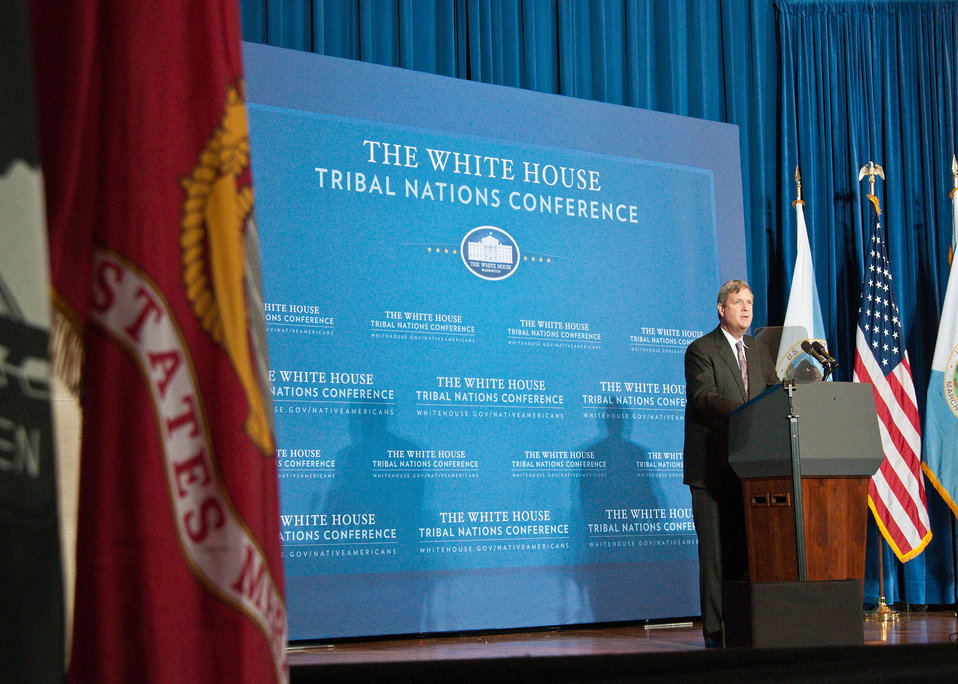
Agriculture Secretary Tom Vilsack speaks at the Fourth Annual White House Tribal Nations Conference at the U.S. Department of Interior in Washington D.C. on Wednesday, Dec. 5, 2012. Cabinet members Interior Secretary Ken Salazar, Agriculture Secretary Tom Vilsack, Education Secretary Arne Duncan, Treasury Deputy Secretary Neal Wolin, Commerce Acting Secretary Rebecca Blank, Health and Human Services Secretary Kathleen Sebelius discussed the gains and progress of the Obama Administration concerning Native American Tribal Nations.